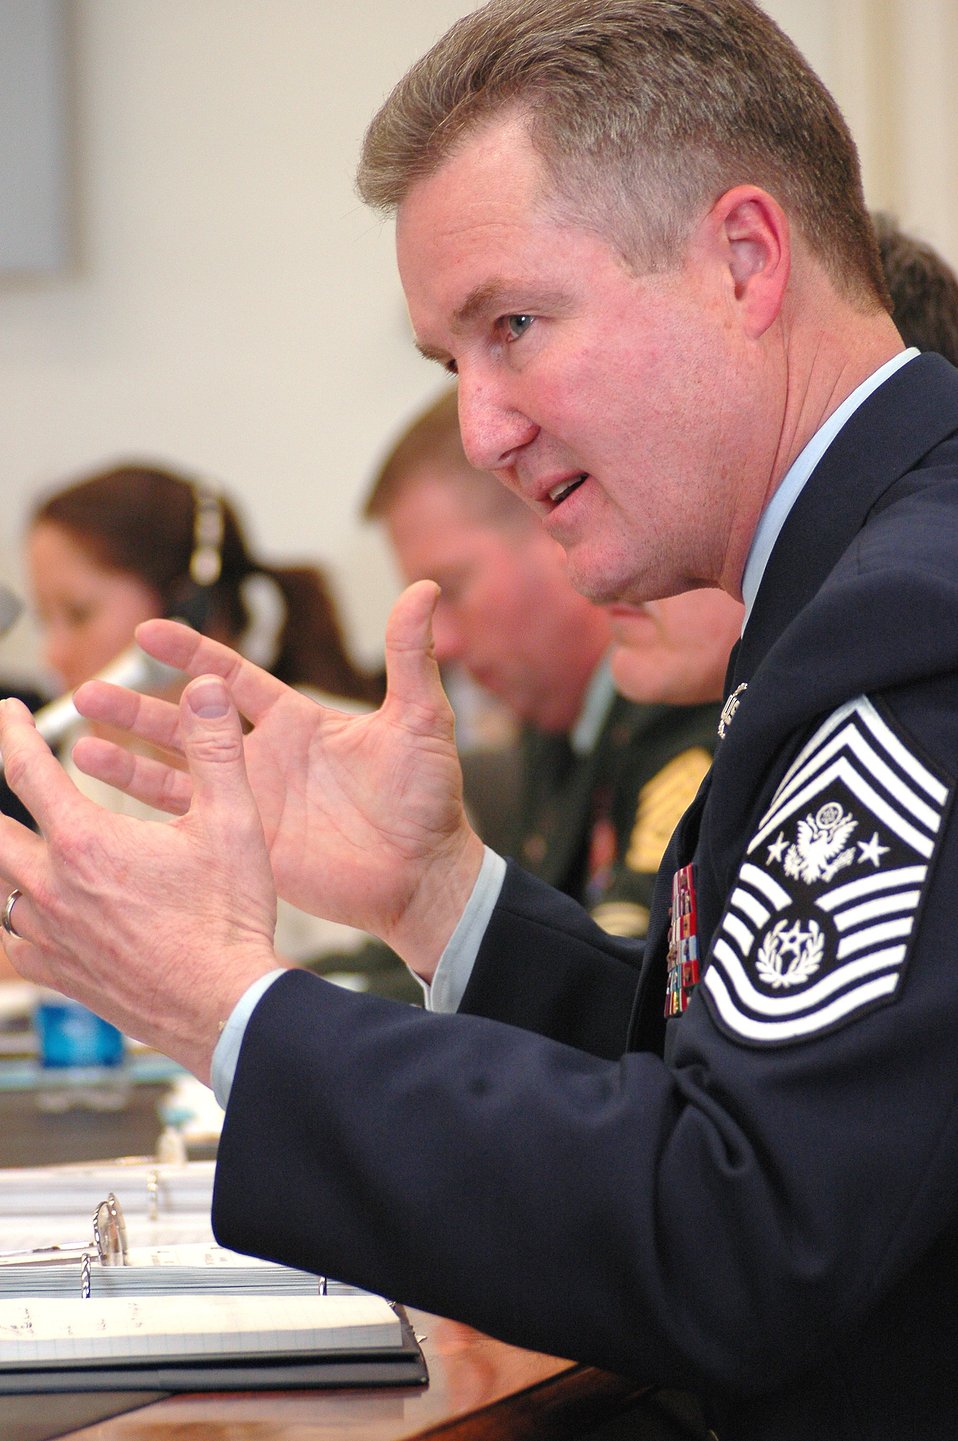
Chief testimony

WASHINGTON (AFPN) -- Chief Master Sgt. of the Air Force Gerald R. Murray testifies Feb. 15 before the House Appropriations Committee subcommittee on military quality of life, veterans affairs and related agencies. The chief said pay, housing and education are the top three issues facing enlisted Airmen in the Air Force today.